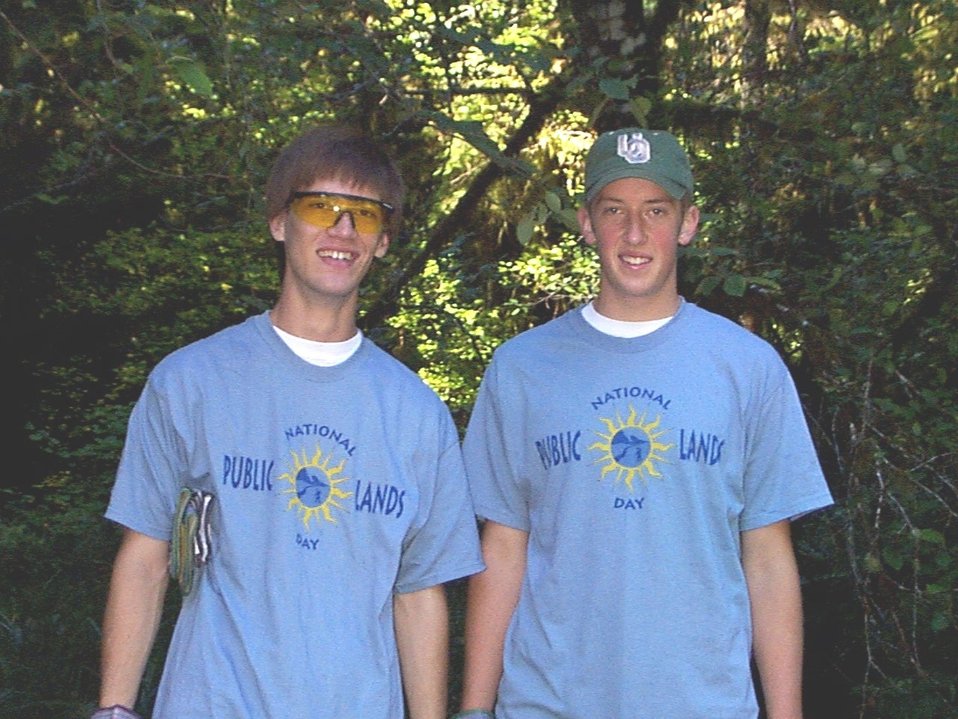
Boy Scout volunteers at McGowen Creek on Public Lands Day 2001.